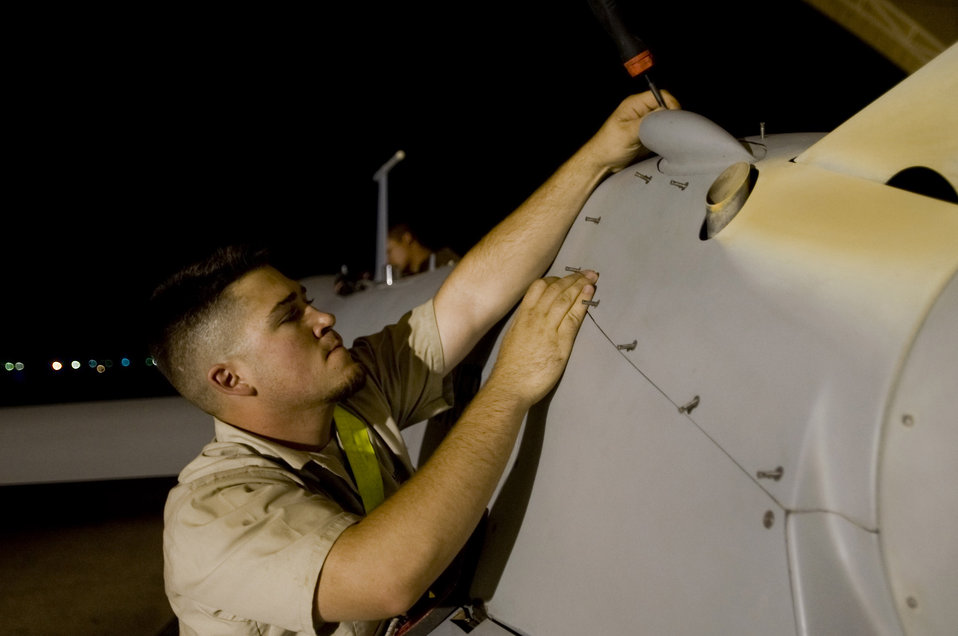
Night watch

Adam Wilson performs post-flight maintenance on an MQ-1 Predator Aug. 11 at Ali Base, Iraq. The Predator is a medium-altitude, long-endurance remotely piloted aircraft designed to interdict and conduct armed reconnaissance against critical and perishable targets. Mr. Wilson is assigned to the 46th Expeditionary Reconnaissance and Attack Squadron Det. 1 here.